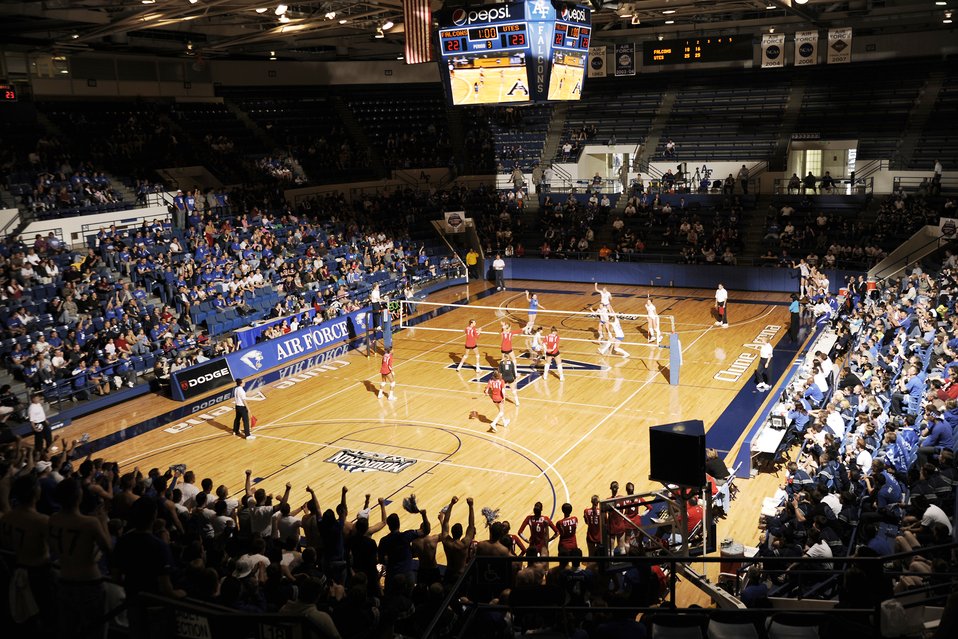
Academy women's volleyball team ends season

The crowd of 2,475 erupts as the Falcons fight back against Utah during the final match of the season at Clune Arena Nov. 21, 2009 at the U.S. Air Force Academy, Colo. The Falcons lost in a three-set decision.